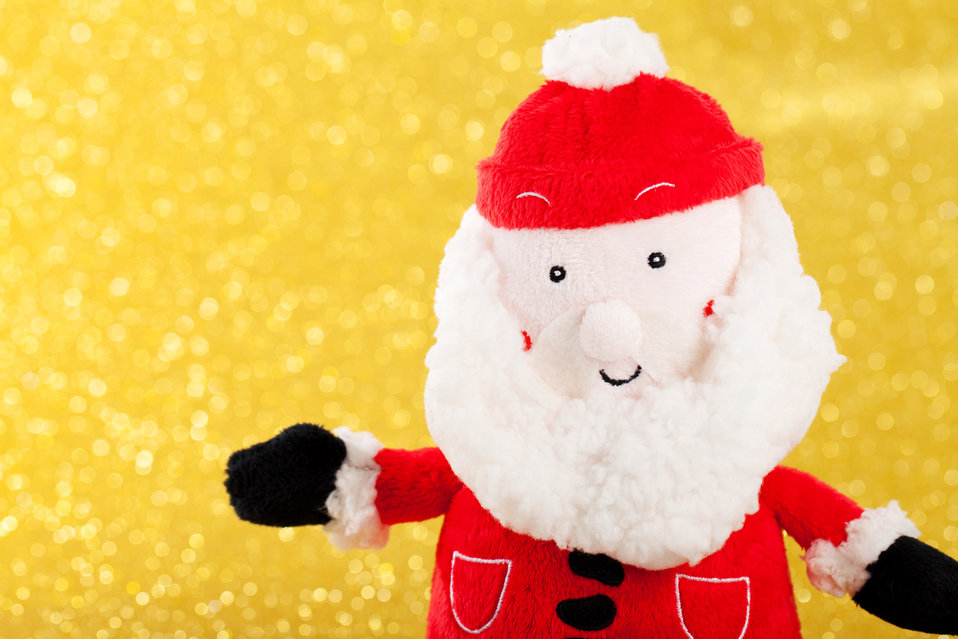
Santa claus on blurred golden background.